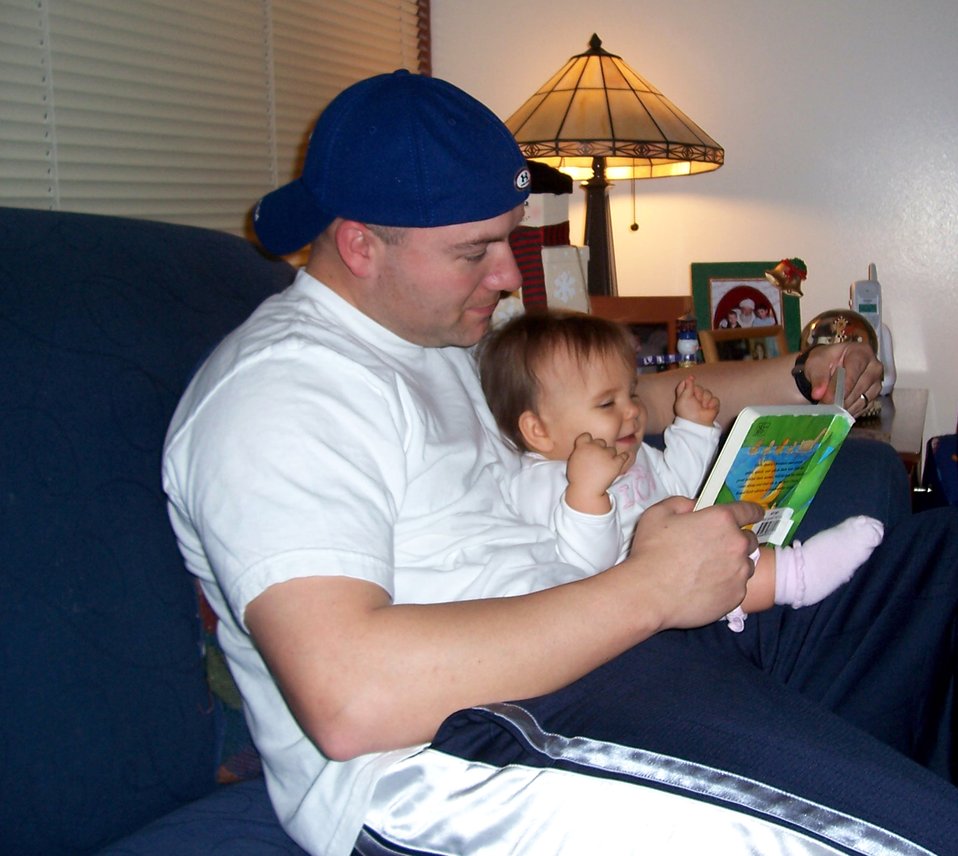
Serving: Tech. Sgt. Booth

Tech. Sgt. Tracey Booth reads 9-month-old Jadyn a book. Sergeant Booth is serving this holiday season as both mom and dad while his wife, Tech. Sgt. Kelli Wright, is deployed to Kirkuk, Iraq.